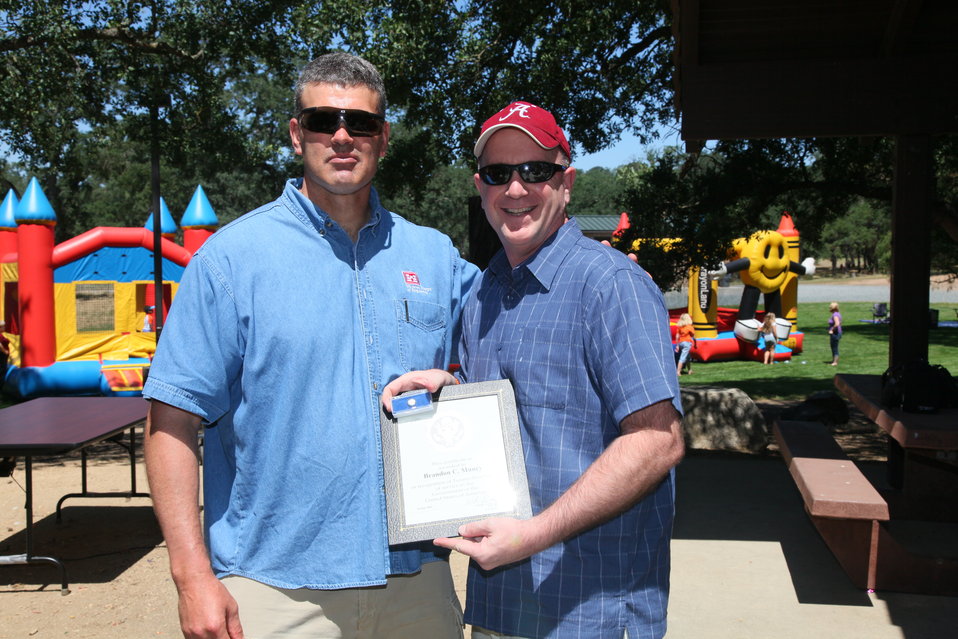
2011 Annual Picnic